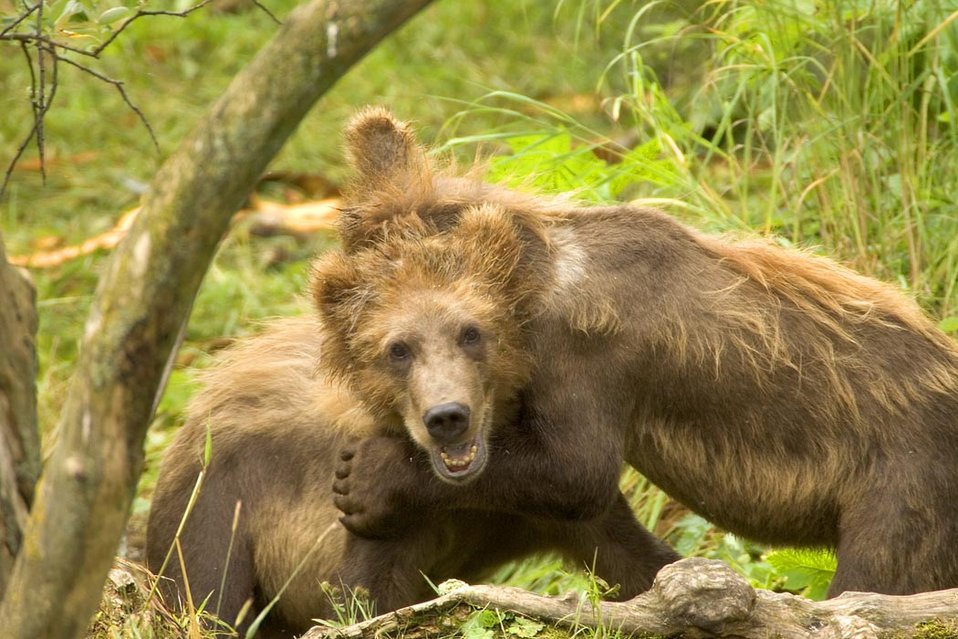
Brown bear cubs playing

Two grizzly bear cubs playing in the Kodiak National Wildlife Refuge.